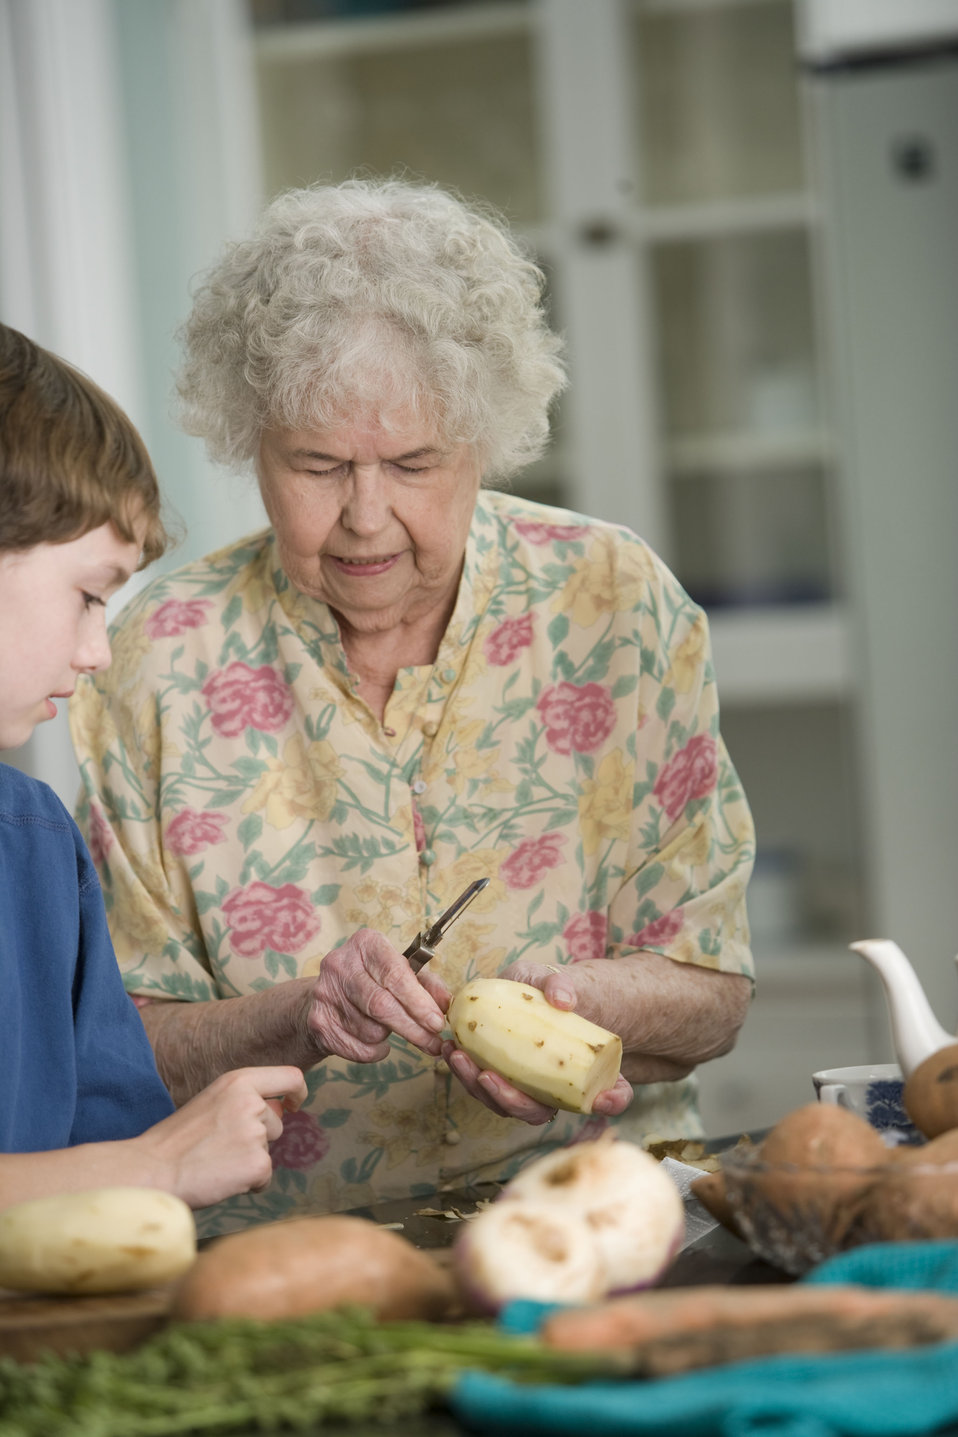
Properly preparing fresh, uncooked produce is a must, and with this in mind, the elderly woman pictured here was teaching her grandson how to do just that, while peeling a number of sweet potatoes.